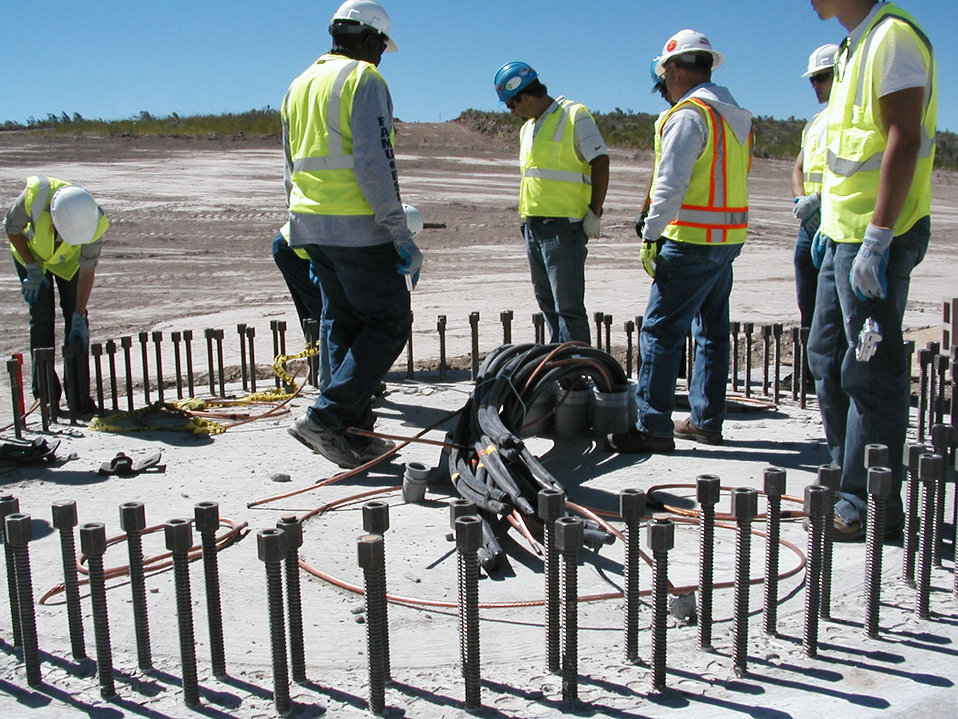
IDAHO NATIONAL LABORATORY WIND PROGRAM PERSONNEL TOUR THE GOSHEN NORTH WIND FARM IN IDAHO FALLS DURING ITS CONSTRUCTION.